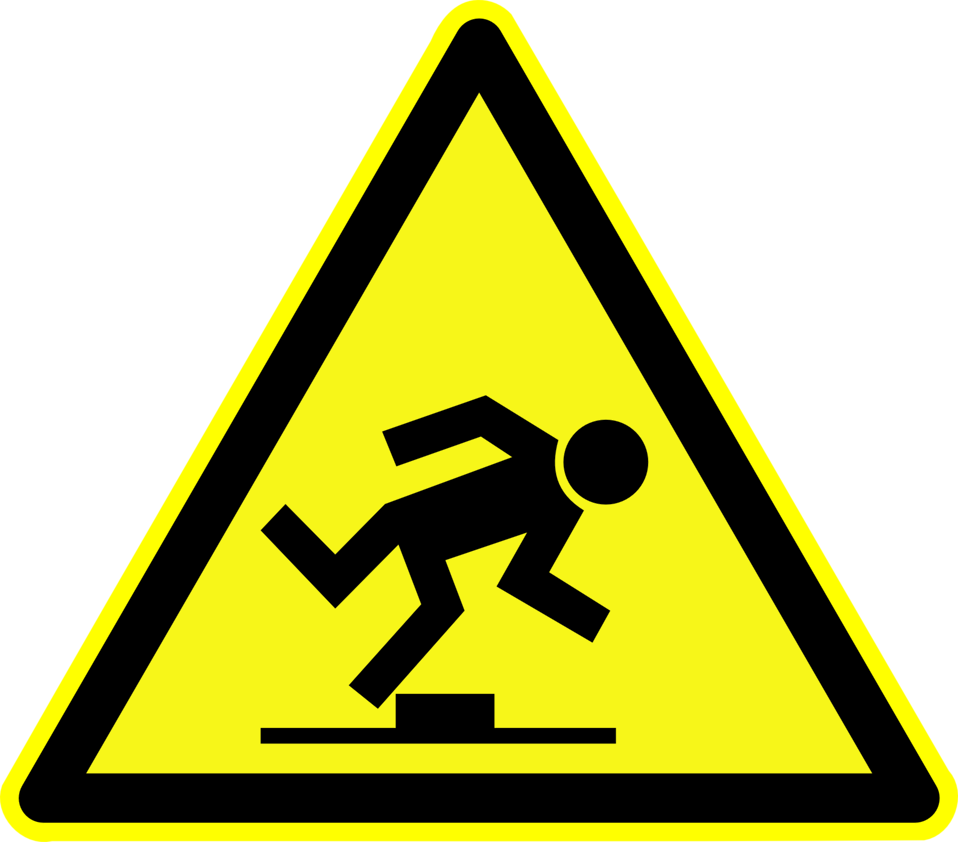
Deutsch: Warnung vor Stolpergefahr, Warnzeichen D-W014 nach DIN 4844-2 Risk of stumbling, warning sign D-W014 according to German standard DIN 4844-2 Français : Risque de chute de plain-pied ; signe D-W014 selon la norme allemande DIN 4844-2